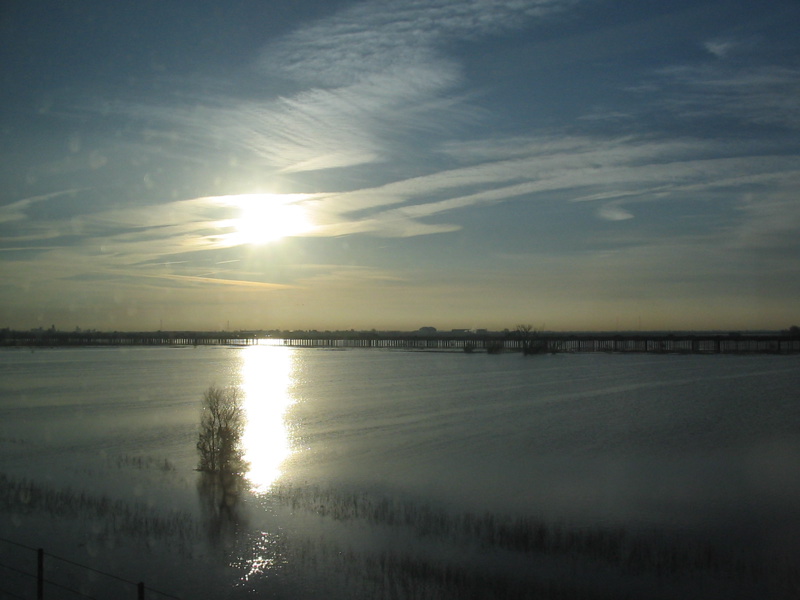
Flooded Yolo Bypass, February 2006. Interstate 80 runs along the causeway in the distance.